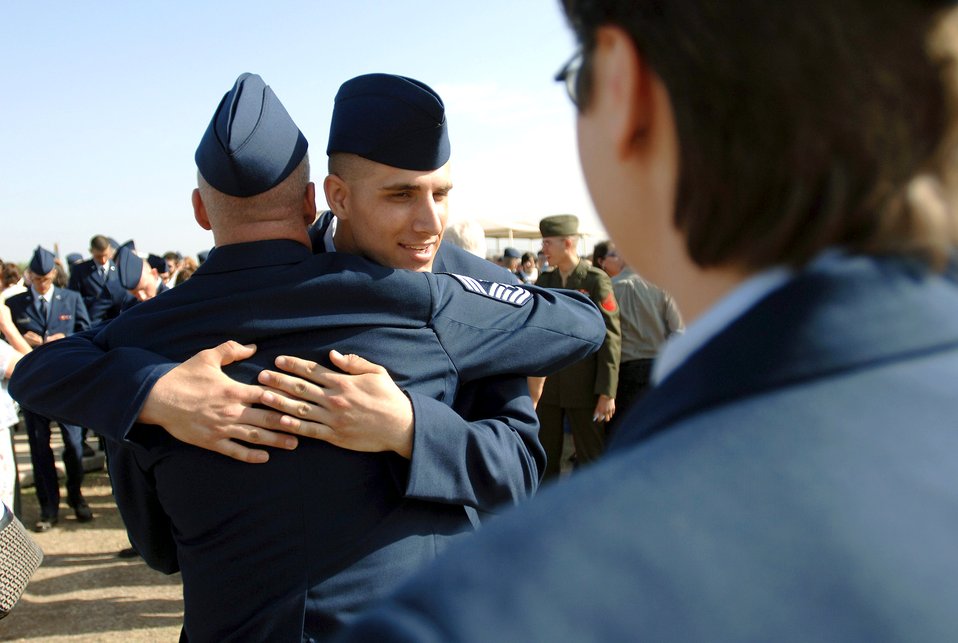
Chief reviews son's graduation

Airman Basic Lance Bowes embraces his father, Chief Master Sgt. Jeff Bowes after graduating from Air Force basic military training course at Lackland Air Force Base, Texas, Friday, March 10, 2006. Airman Bowes was assigned to the 322nd Training Recruit Squadron Flight 235. Chief Bowes is the 14th Flying Training Wing command chief at Columbus Air Force Base, Miss.